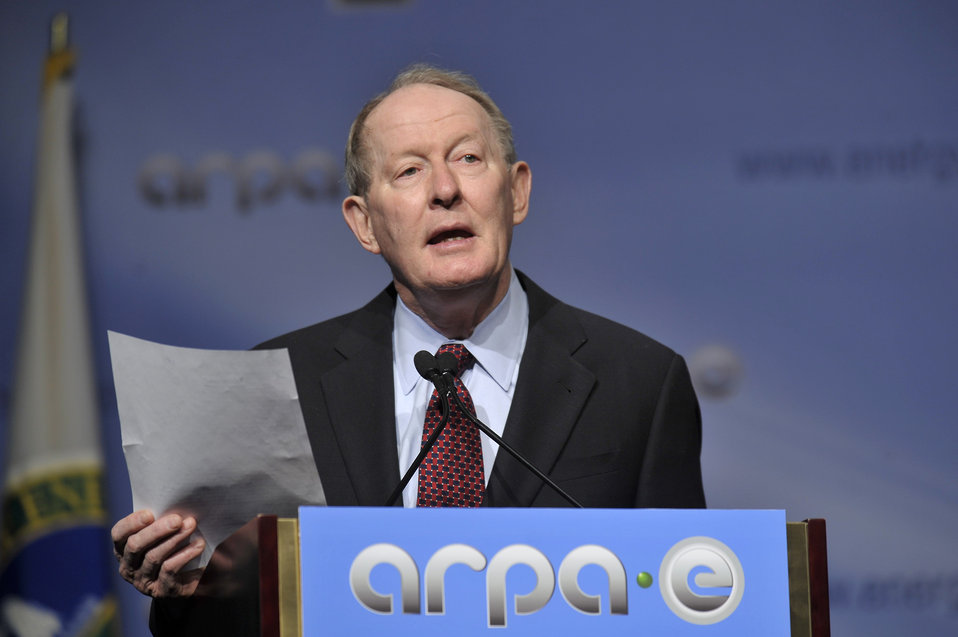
ARPA-E Energy Innovation Summit 2011, 76 of 83

Senator Lamar Alexander (R-TN).